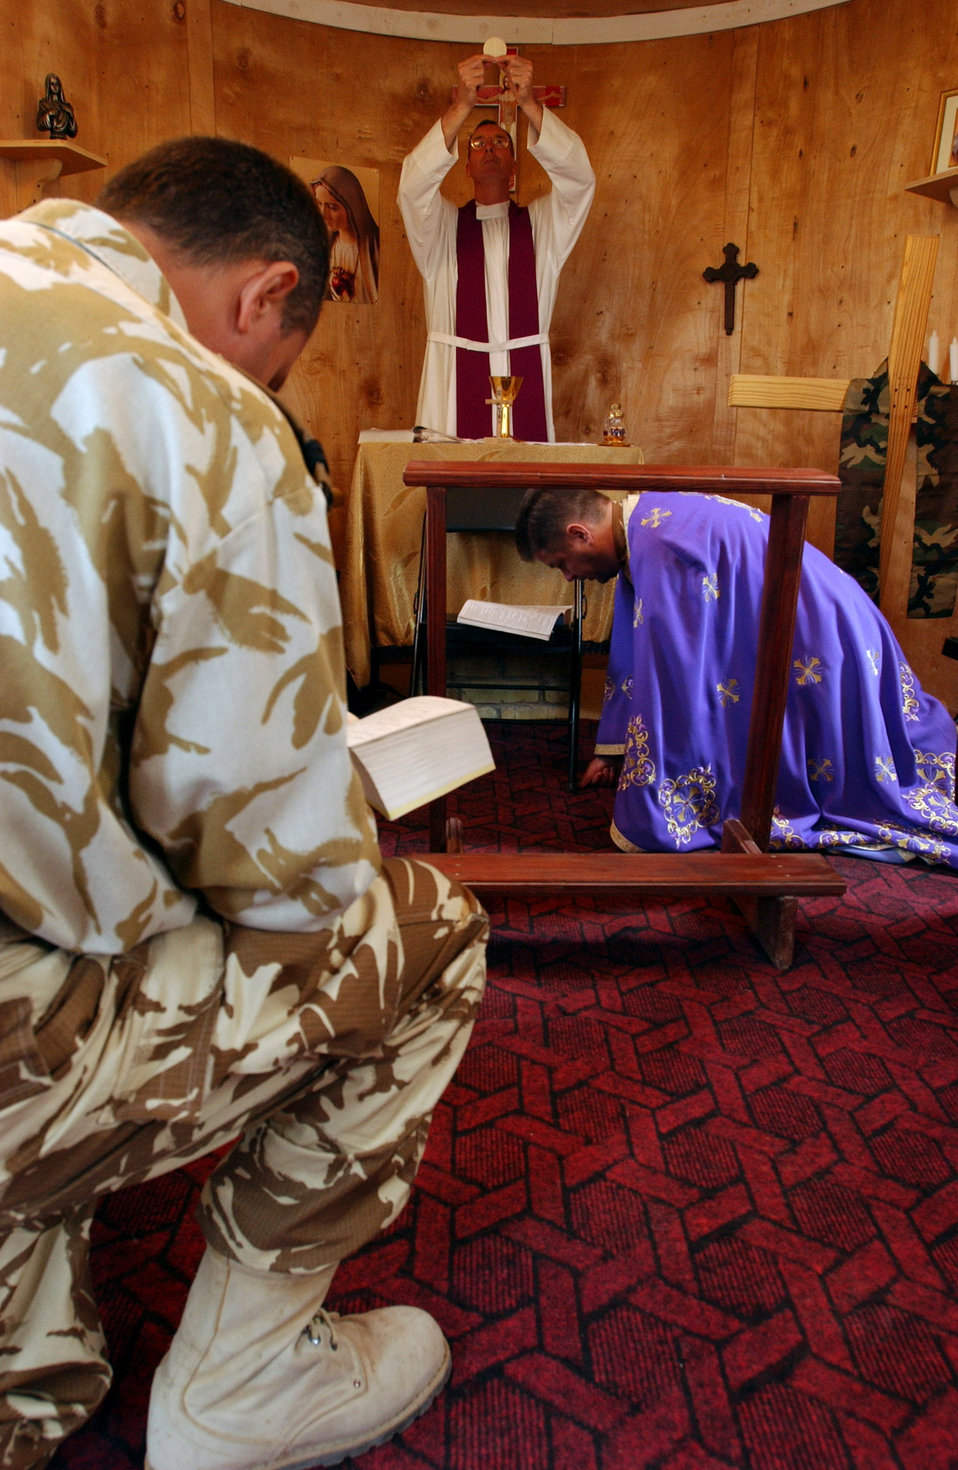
Air Force chaplain celebrates Mass for Romanians in Italian

Chaplain (Maj.) Timothy Hirten gives the blessing of the bread while Chaplain (Capt.) Florin Mihalcea and Lt. Col. Marian Popa kneel in prayer Dec. 5 at the Romanian chapel at Ali Base, Iraq. Chaplain Hirten volunteers his time to help lead a Catholic Mass for coalition forces at the Romanian camp. The chaplain is assigned to the 407th Air Expeditionary Group Chapel and is deployed from Altus Air Force Base, Okla. Chaplain Mihalcea and Colonel Popa are both assigned to the Romanian Army.